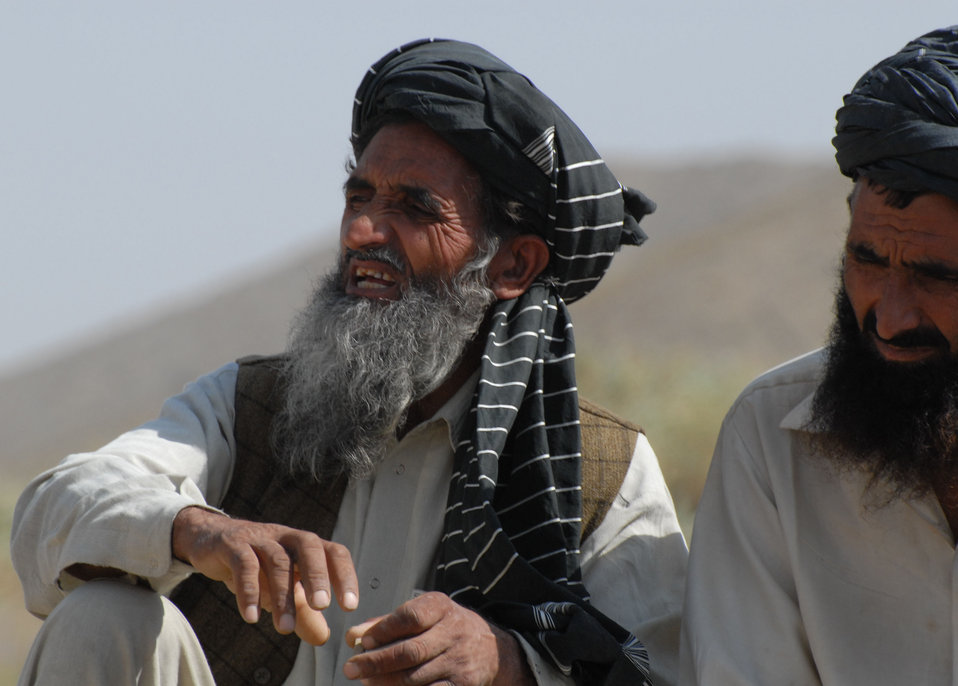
'On the Road' in Paktya Province